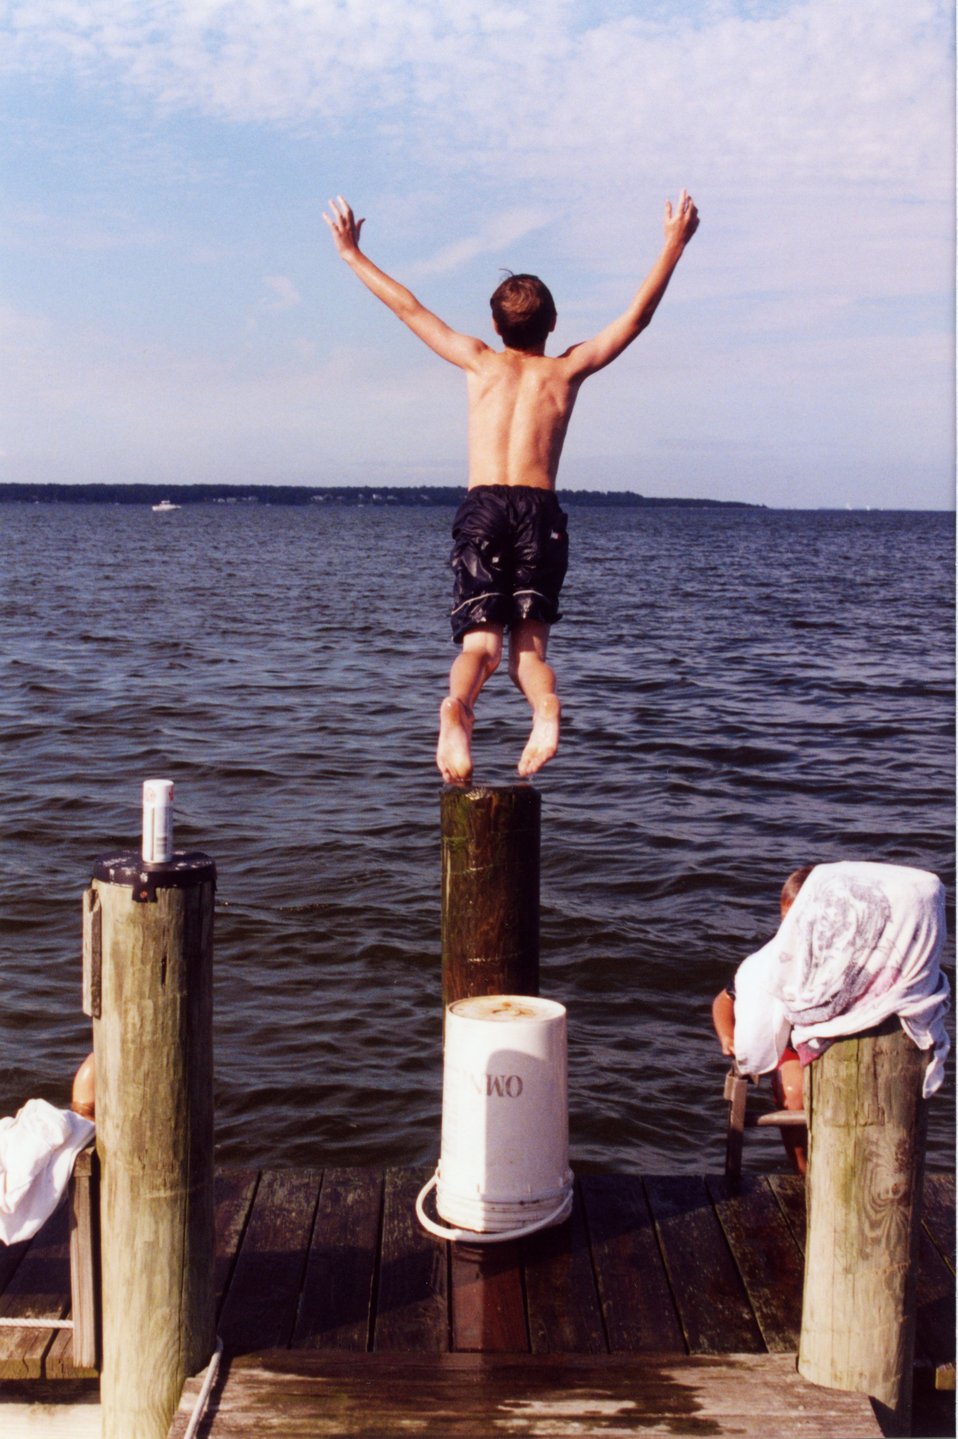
The makings of a good 'belly flop.'